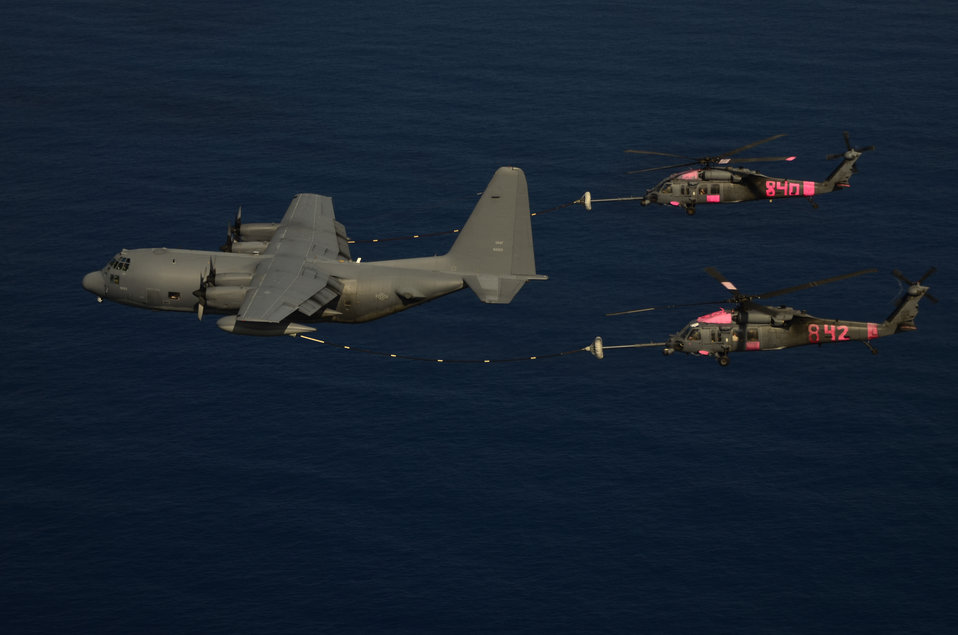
ANG Rescue

Members of the 129th Rescue Wing California Air National Guard assist in the rescue operations of two injured fisherman who were approximately 1400 miles off the coast of Acapulco, Mexico on Sept. 5, 2012.